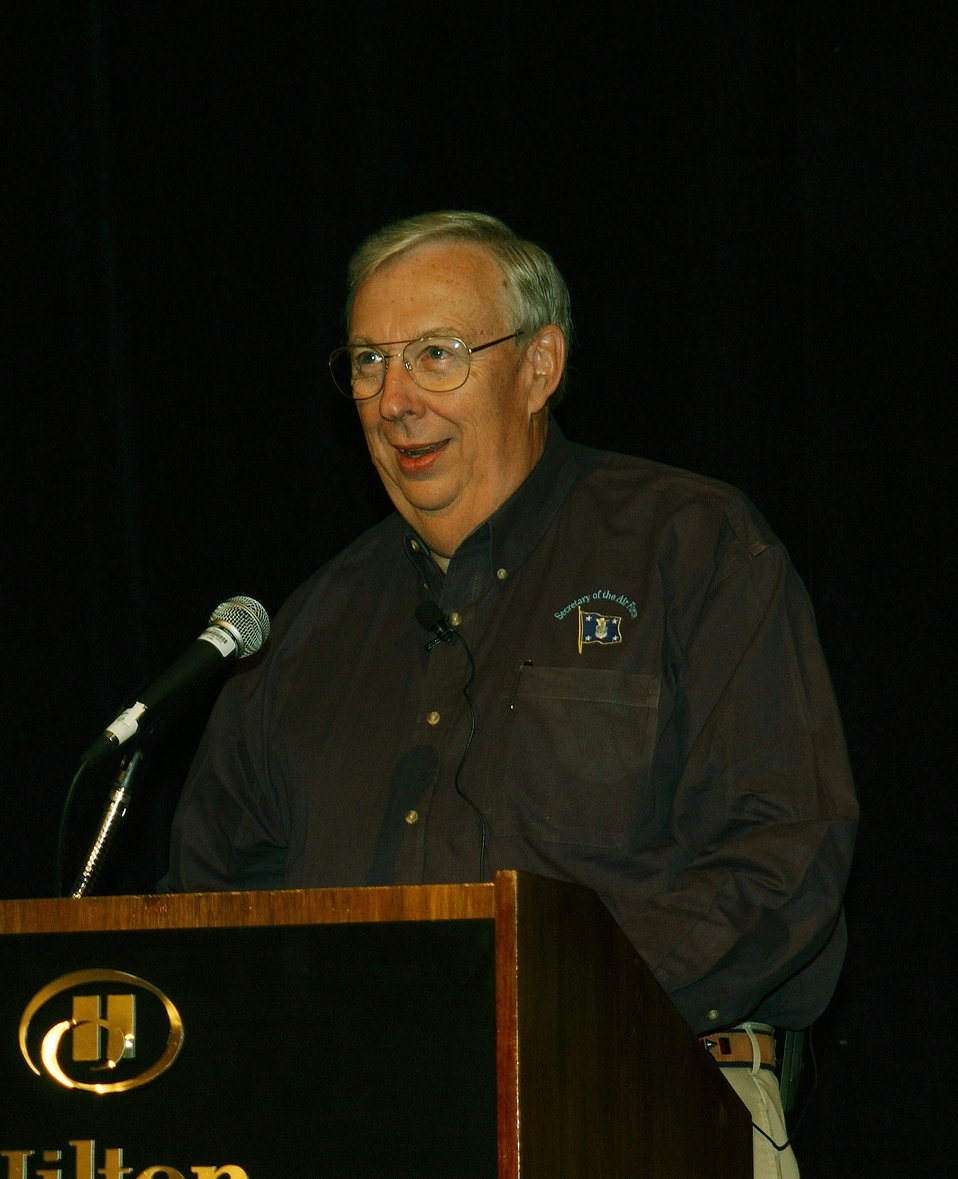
Secretary Roche

ANAHEIM, Calif. -- Secretary of the Air Force Dr. James G. Roche provides the keynote address for the opening of the Airlift/Tanker Association convention here Oct. 30. The convention marked the 35th gathering of active duty, Guard, Reserve, civilians and contractors who are part of the air-mobility community.